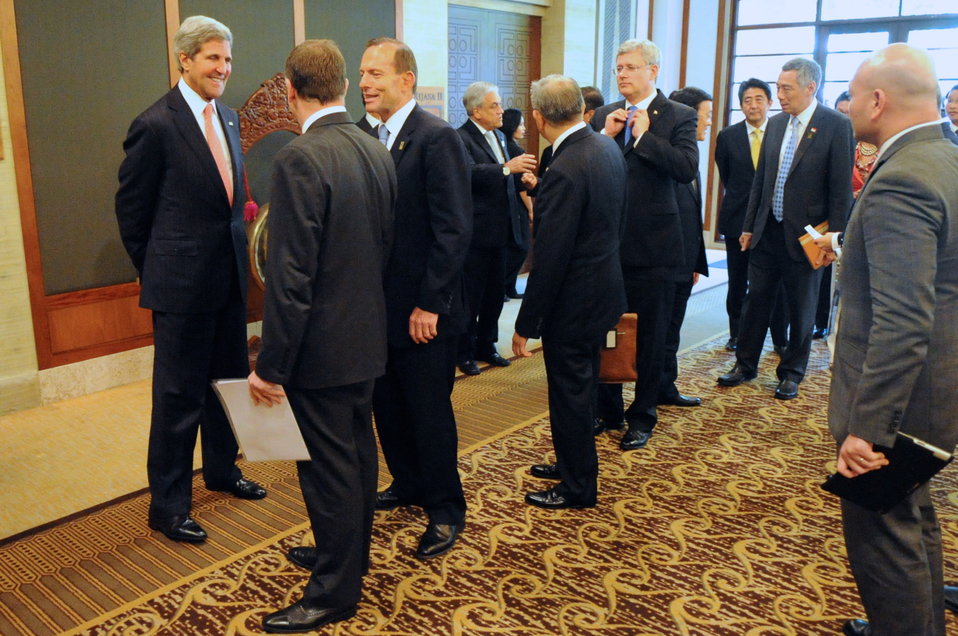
Secretary Kerry Chats With Prime Ministers Key and Abbott of New Zealand and Australia

U.S. Secretary of State John Kerry chats with Prime Ministers John Key of New Zealand and Tony Abbott of Australia - as other world leaders line up - before a meeting about the Trans-Pacific Partnership (TPP) held on the margins of the APEC Leader meetings in Bali, Indonesia on October 8, 2013.